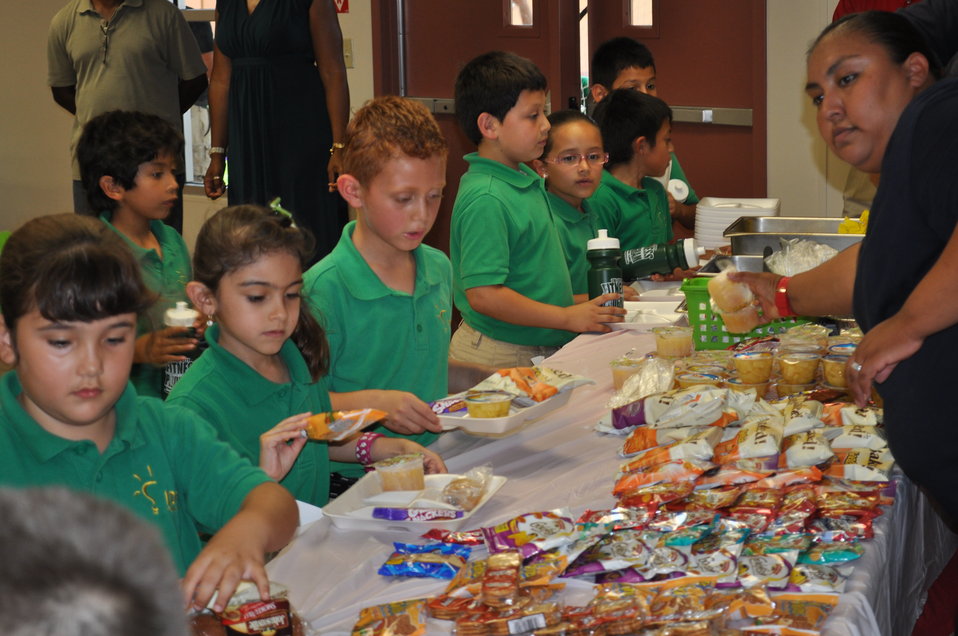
Catholic Charities began their second year providing meals to children up to age 18 through the U.S. Department of Agriculture’s (USDA) Summer Food Service Program (SFSP) to children at the Basilica of Our Lady of San Juan Del Valle, TX on May 24, 2012. The SFSP is a federally funded program that is administered by the states in which they reimburse organizations for meals served to children during the summer months.